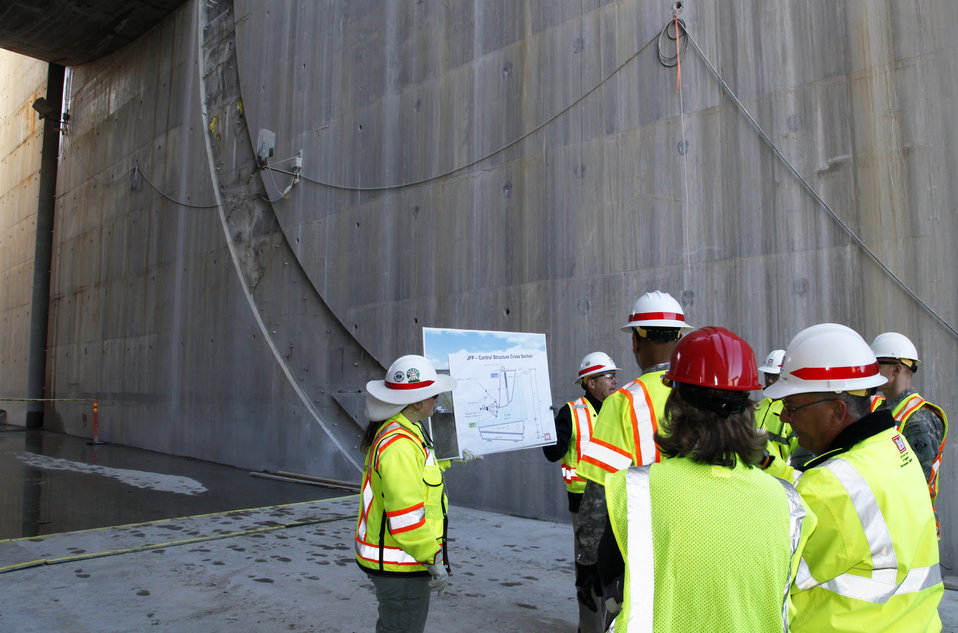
Gate support structure work continues at Folsom spillway project

Brian Szydlik and Tatia Taylor, civil engineers with the U.S. Army Corps of Engineers Sacramento District, describe the construction of the Folsom Dam auxiliary spillway concrete support structures to U.S. Army Corps of Engineers’ South Pacific Division commander Brig. Gen. Dave Turner and other Corps leaders during a construction site visit Jan. 22, 2014 in Folsom, Calif. The support structures will soon house six large tainter gates that control water flow.